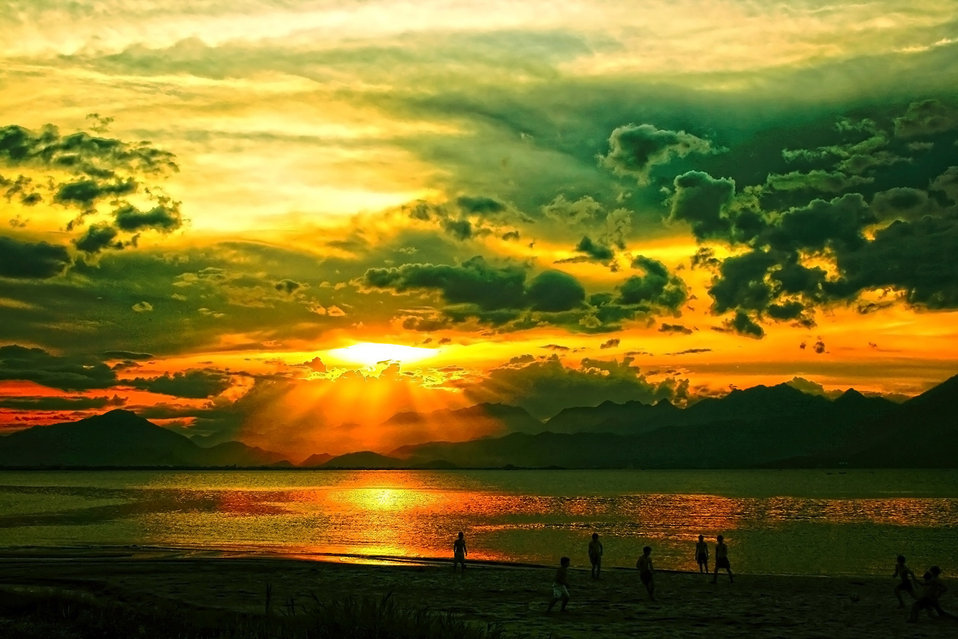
Sunset #11

Sunset on the bay of danang, central vietnam..